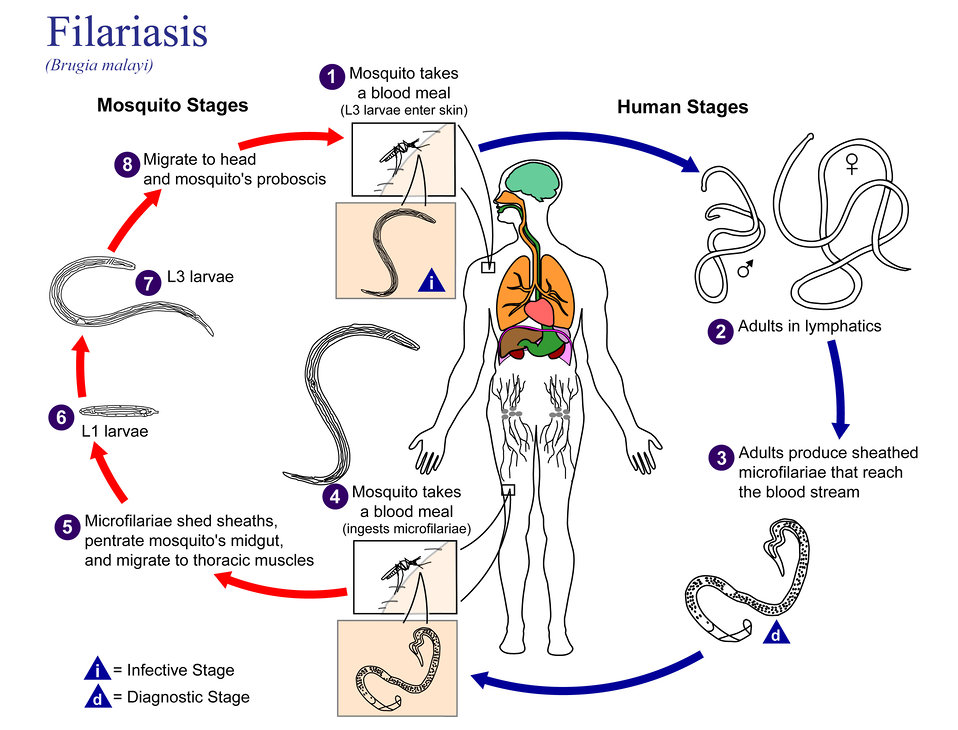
This illustration depicts the life cycle of Brugia malayi, the causal agent of Filariasis.